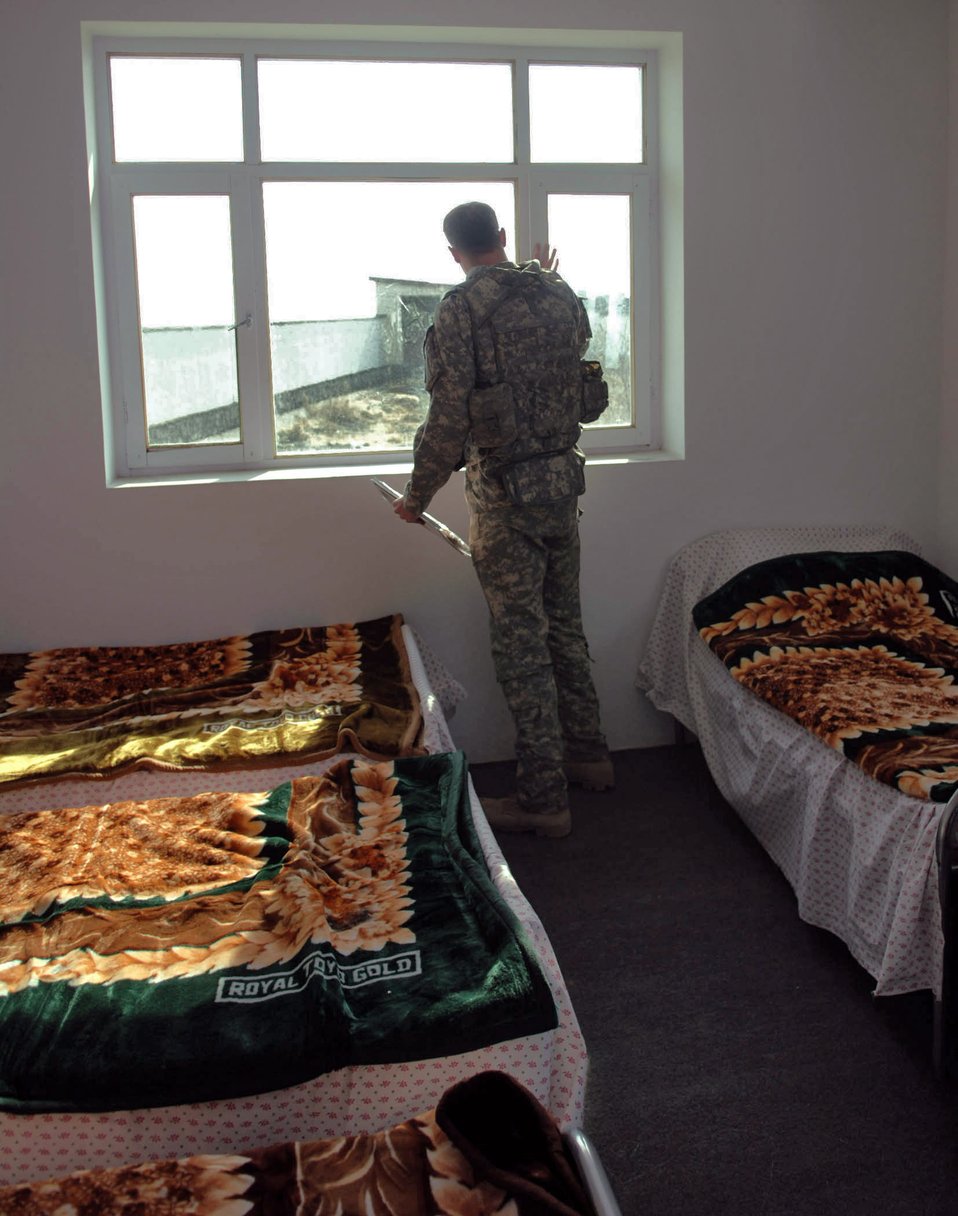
U.S. team opens shelter for Afghan women

KAPISA PROVINCE, Afghanistan - Army Capt. Jordan Berry examines a newly-opened Afghan women's shelter Dec. 13 in Kapisa Province, Afghanistan. The Bagram PRT provided more than $86,000 in support of the project, which was completed by local contractors. Captain Berry is the Bagram Provincial Reconstruction Team's civil affairs team leader for Kapisa Province.